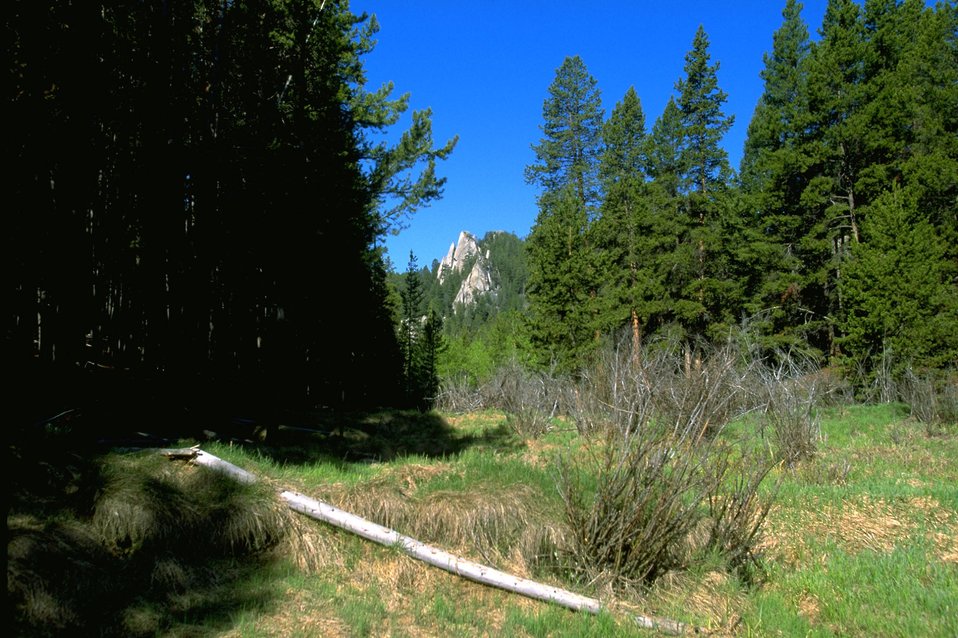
Trees, grass, shadows, and rock formation